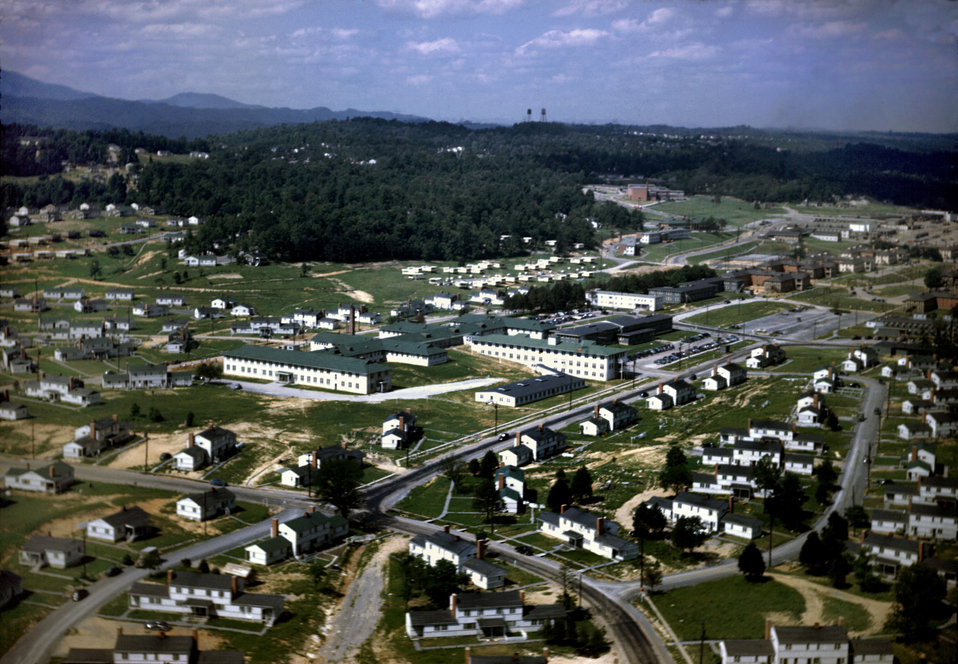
View of the City of Oak Ridge

3324 DOE photo by Ed Westcott Oak Ridge Tennessee 1940s